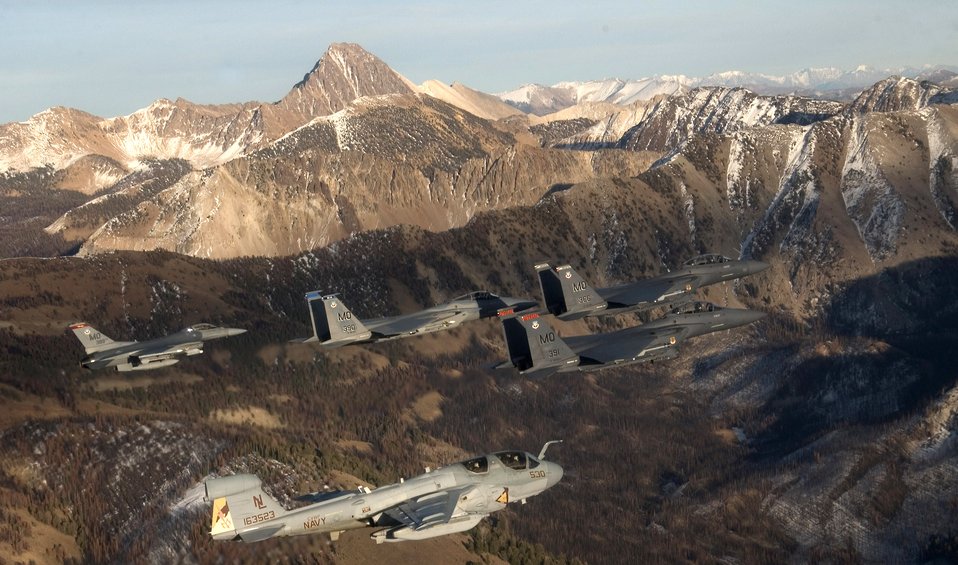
Flying over Idaho

A five-ship formation flies over the Idaho Sawtooth Mountains Nov. 1. Col. Anthony Rock, 366th Fighter Wing commander, led the formation of two F-15E Strike Eagles, and F-15 Eagle, an F-16 Fighting Falcon, all from the 366th FW at Mountain Home Air Force Base, Idaho, and an EA-6B Prowler from the 388th Electronic Control Squadron at Naval Air Station Whidbey Island, Wash., a geographically separated unit from the 366th FW The 366th FW began the first phase of its F-16 drawdown when five jets departed the base Nov. 2. The departure is part of the wing's realignment. The 366th FW began the first phase of its F-16 Fighting Falcon drawdown when five jets departed the base Nov. 2. The departure is part of the wing?s realignment from an F-16, F-15C and F-15E base to an all F-15E Strike Eagle installation by 2011. The move, outlined in the 2005 Base Realignment and Closure recommendation, is also part of the Air Force initiative to become a smarter and leaner force by consolidating its F-15 and F-16 fighter aircraft.